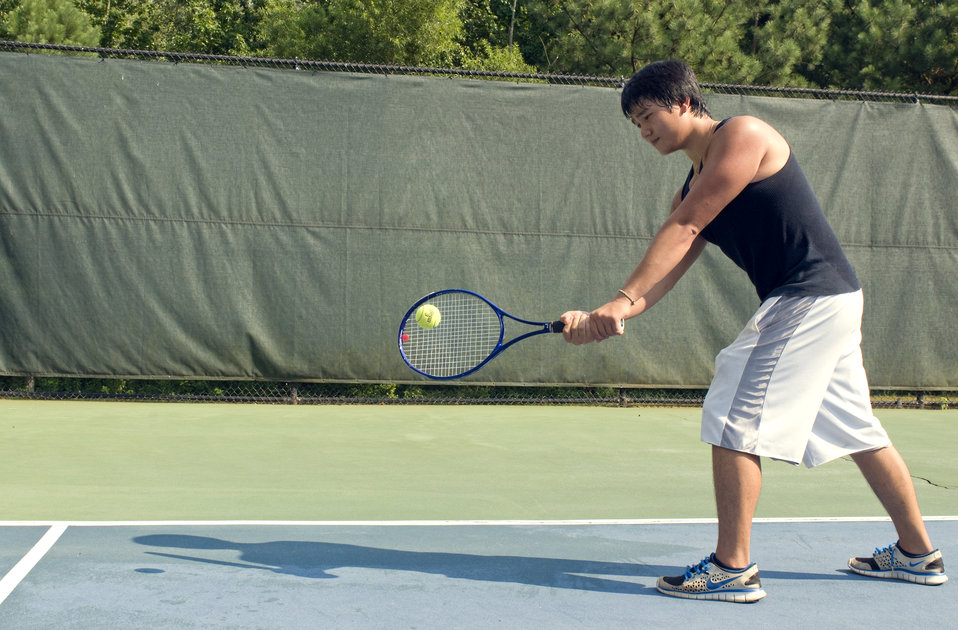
Caught in a mid-forehand swing, this young man was playing a game of tennis on the court. Wearing a darkly-colored tank top, loose-fitting shorts, and a protective layer of sunscreen, all helped block ultraviolet rays from damaging his sun-exposed skin. He'd also packed, or had access to some drinking water, which would keep him hydrated in the heat.